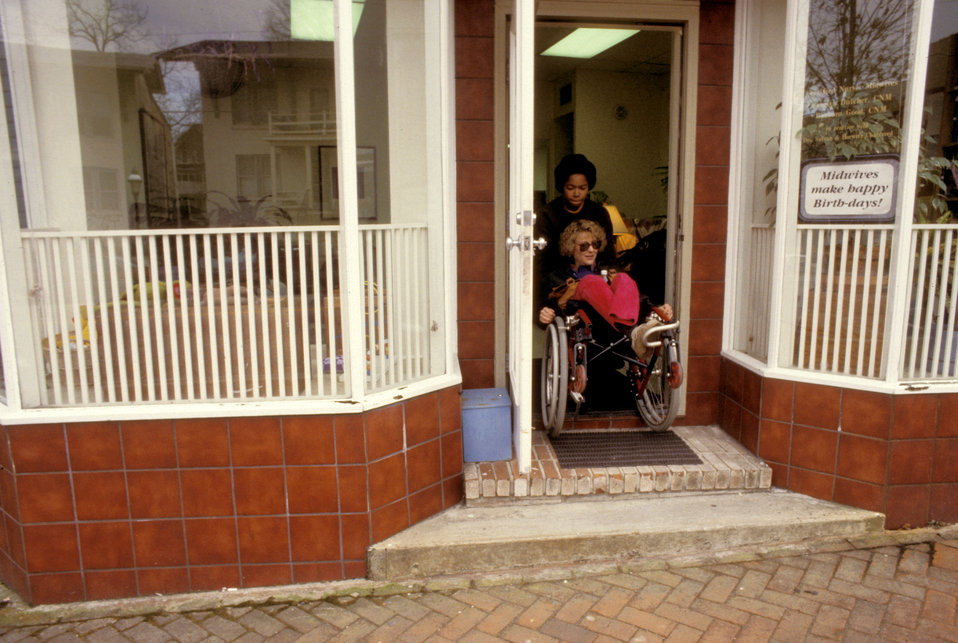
In this 1993 image, the front of a women's clinic revealed a front door that was accessed via a two-step stoop, which made accessibility an issue for individuals having problems with mobility, such as the wheelchair-seated woman seen here, as she was assisted with exiting the facility. In PHIL 9022 - 9026, a temporary plywood ramp had been installed. Even though the temporary ramp installation made access easier for the mobility-challenged, it was constructed in such a way as to make it a dangerous, though short-term solution. PHIL images 9027 - 9029 depicted a long-term, permanent solution using a brick, concrete, and metal ramp. It was not the perfect solution, for it lacked adequate maneuvering room near the clinic doorway. It also clearly appeared as an add-on, or after-the-fact solution that protruded into the wide sidewalk, while attempting to blend in with the existing buildings by using brick, colored concrete, and wrought iron rails. Stairs had also been provided.